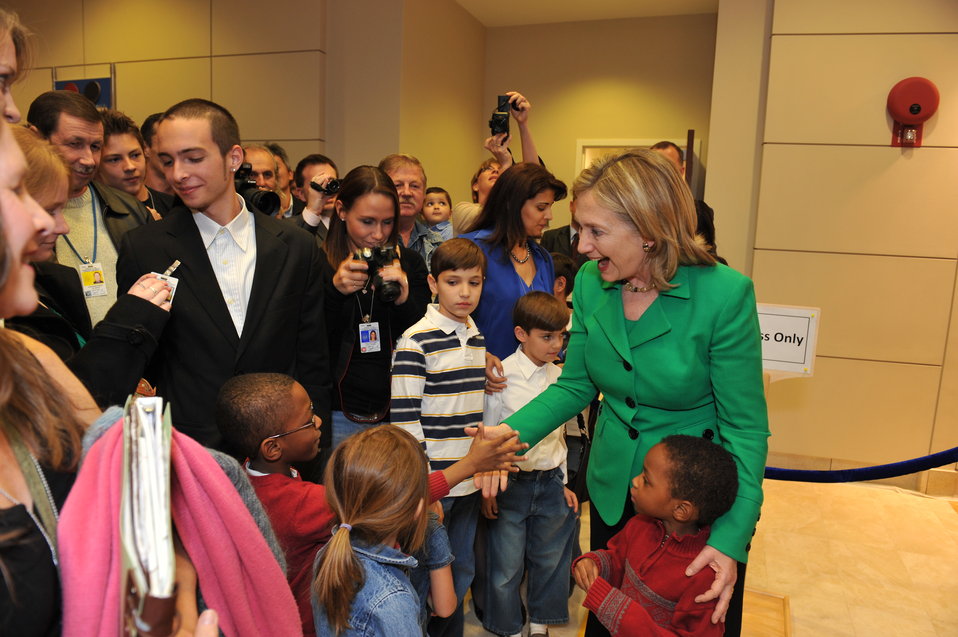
Secretary Clinton Meets With Children at the U.S. Embassy Tashkent

U.S. Secretary of State Hillary Rodham Clinton speaks to the U.S. Embassy Tashkent community in Tashkent, Uzbekistan, on December 2, 2010.